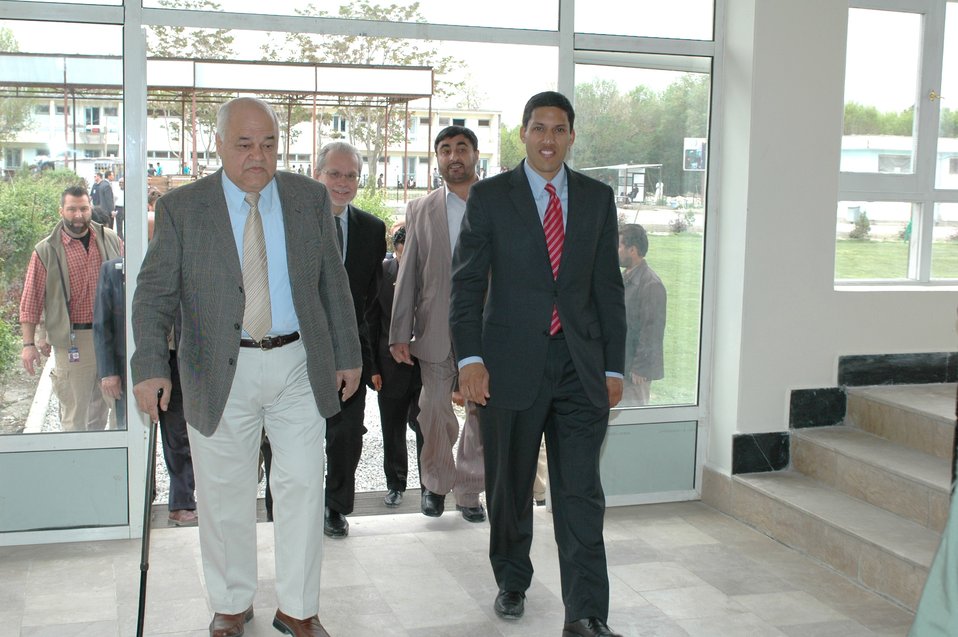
Dr Shah Visits Votech in Kabul